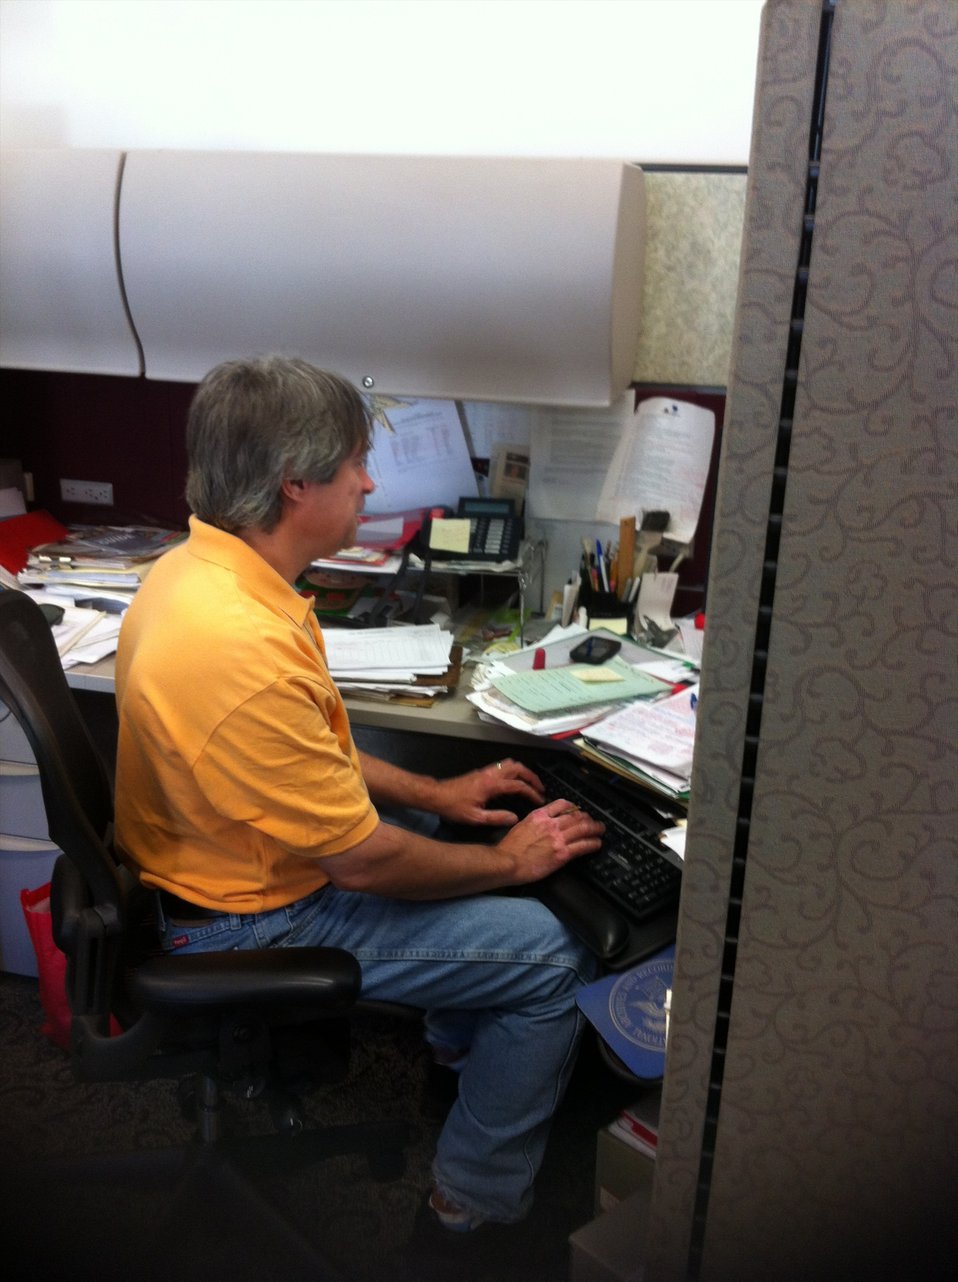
Nick Baric is at his desk composing an email.; Location: Archives 1, Washington, D.C.